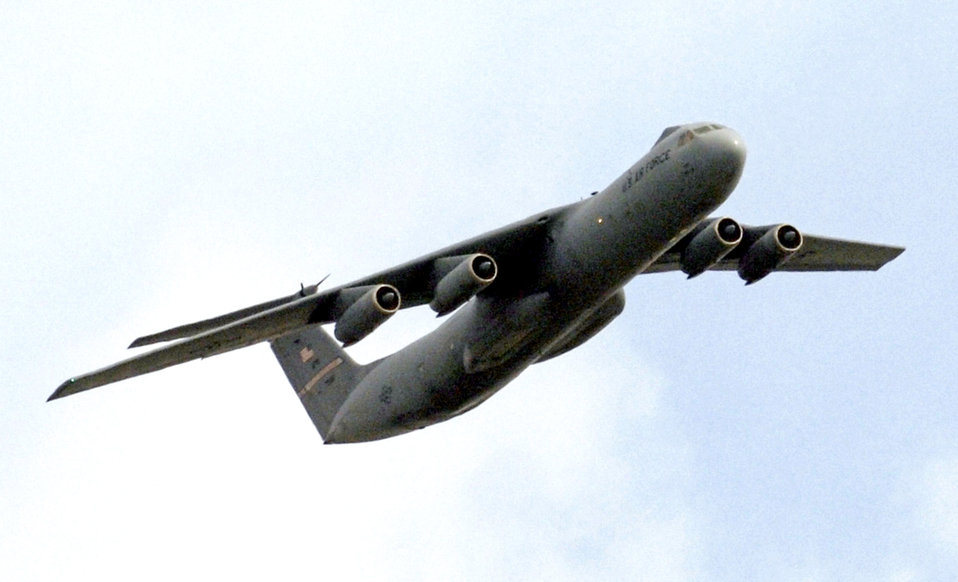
Final flight

A C-141C Starlifter from the 445th Airlift Wing circles over Scott Air Force Base, Ill., on Friday, April 7, 2006. The aircraft, tail number 67-0166, made its final flight. It will take its place among other Air Mobility Command aircraft at the heritage airpark being built here this year. The 445th, based at Wright-Patterson Air Force Base, Ohio, is converting from the Starlifter to the C-5 Galaxy.